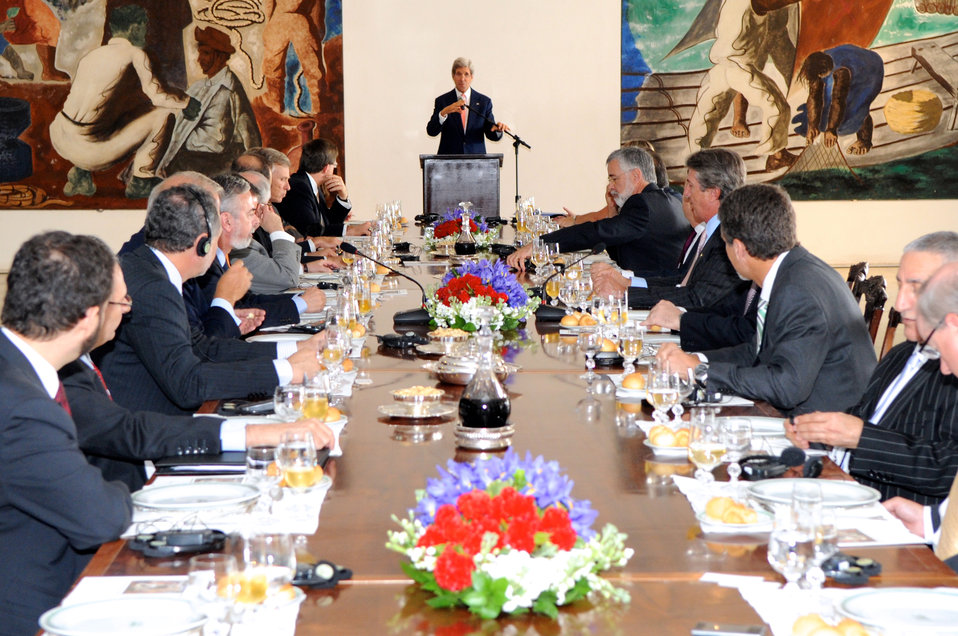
Secretary Kerry Toasts Brazilian Foreign Minister Patriota

U.S. Secretary of State John Kerry toasts Brazilian Foreign Minister Antonio Patriota before a working lunch in Brasilia, Brazil, on August 13, 2013.